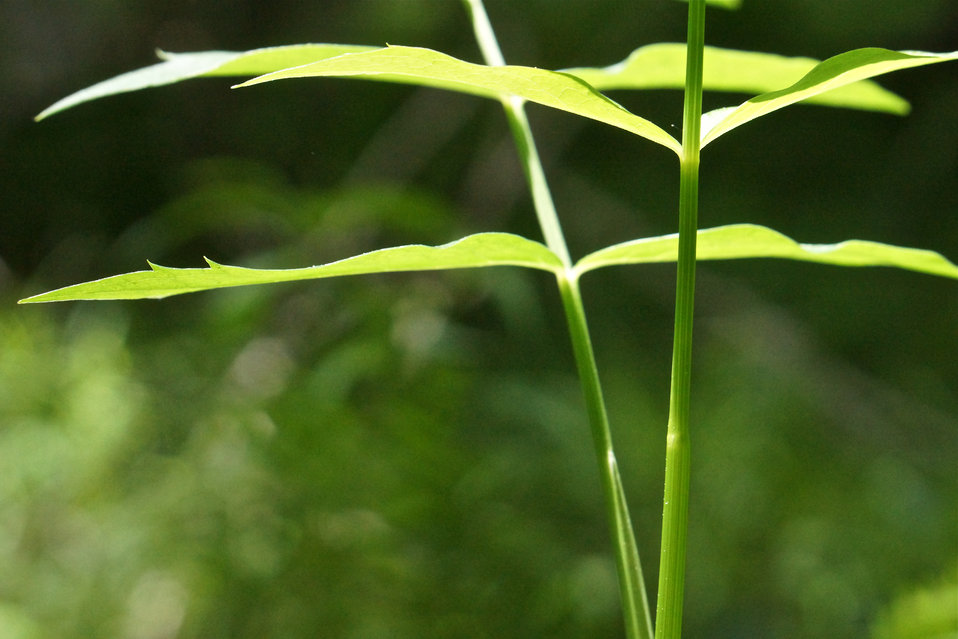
Sunshine on plant leaves

In May, bog conservationists from Tennessee, North Carolina, and Georgia convened in the north Georgia mountains for the spring, 2014 meeting of the Bog Learning Network. The event provided an opportunity for biologists to see, first hand, the result of management efforts at two north Georgia bogs. More importantly, the outings provided an opportunity to share innovative approaches to bog management, such as the role of the Georgia Plant Conservation Alliance in conserving rare plants and coordinating a cadre of volunteers to work on bog management.

The Bog Learning Network was convened in the winter of 2013 as a way to bring together people working for bog conservation across the Southern Appalachians. Southern Appalachian bogs are one of North America’s rarest habitats and home to many rare plants and animals.